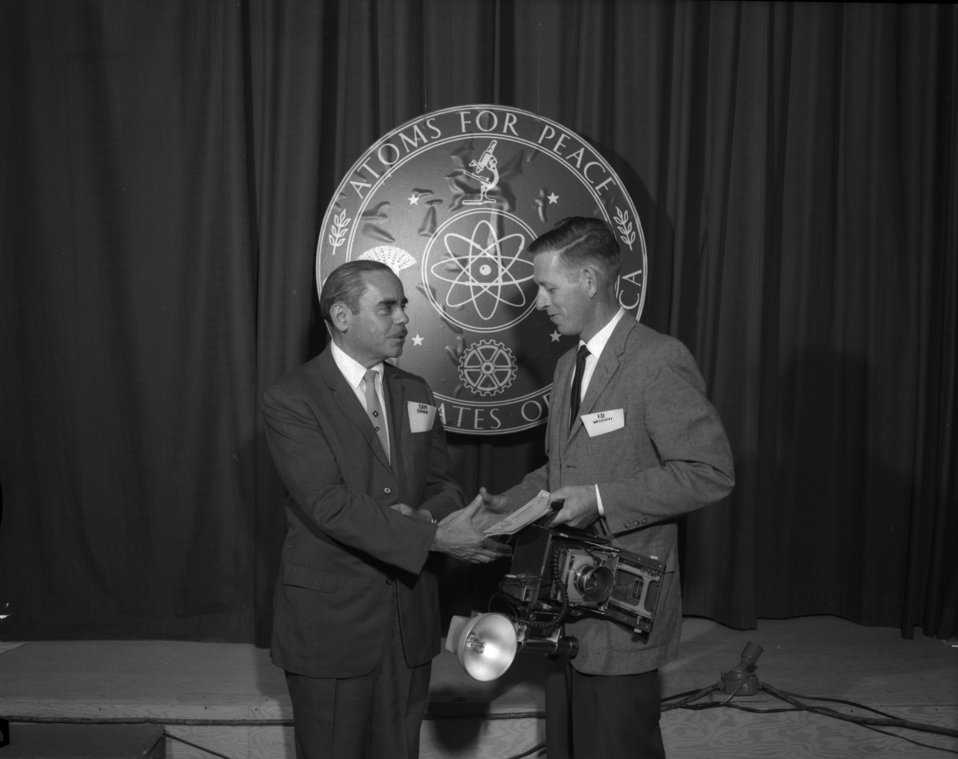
Suggestion Award to Ed Westcott Oak Ridge

60-0752b
DOE photo by T.R. CookSuggestion Award J.E. Westcott presented by Mr. Sapirie Oak Ridge Tennessee 8/4/1960